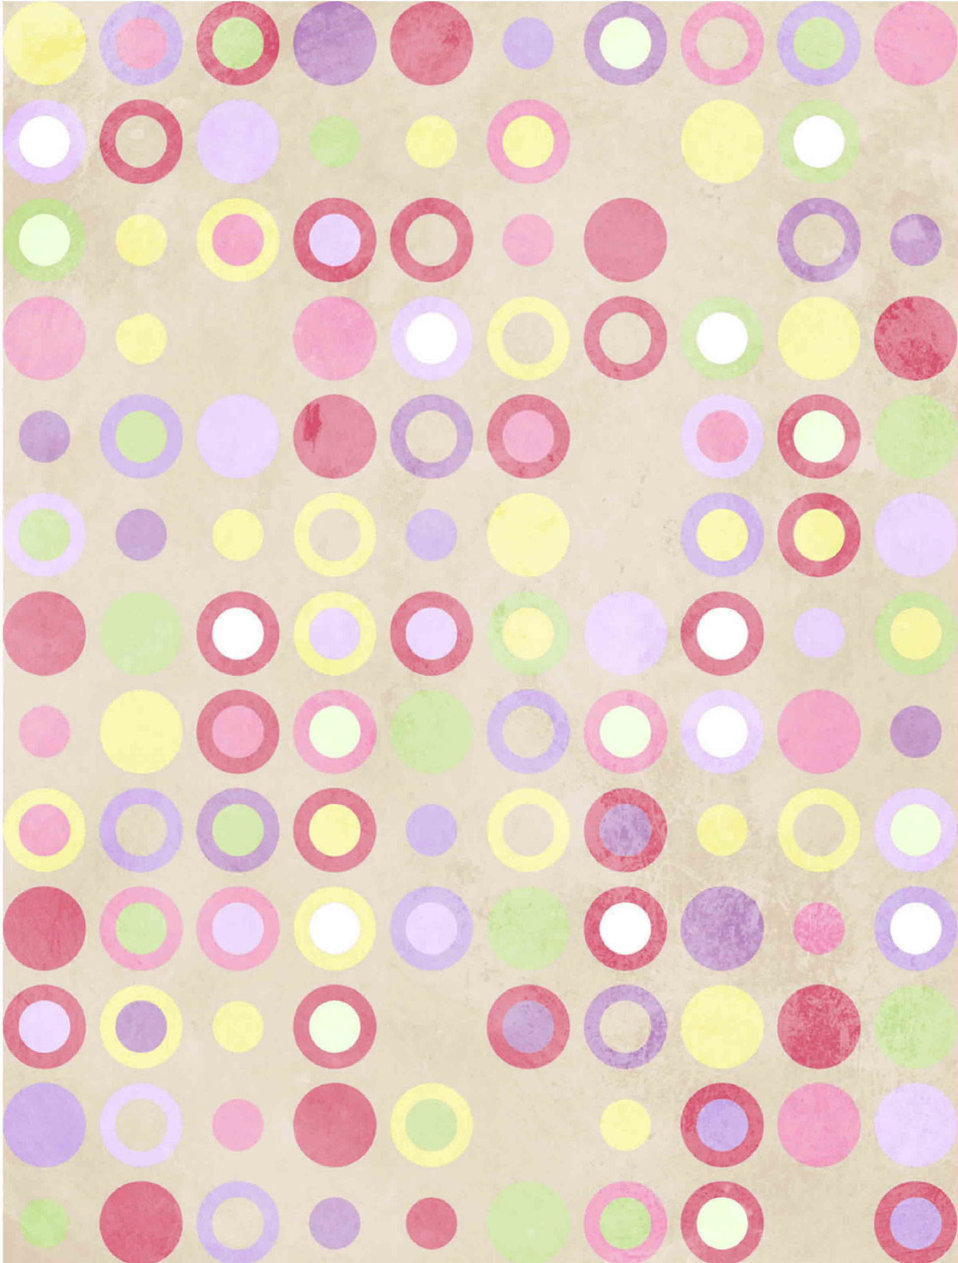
Pink polka dots

A pink polka dotted background.